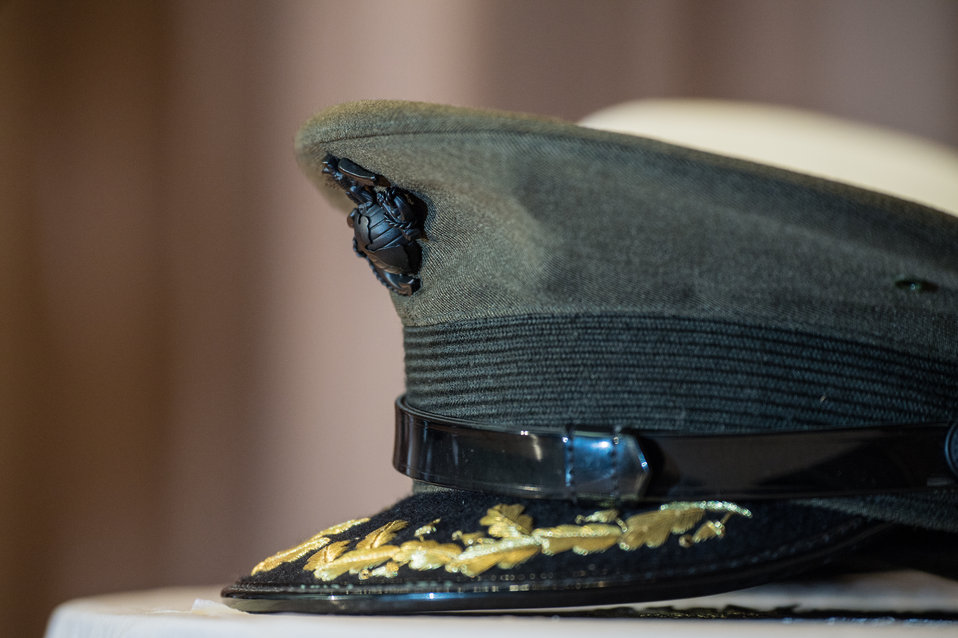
A service hat representing the U.S. Marine Corps (USMC) by Captain (retired) U.S. Army and Vietnam veteran Andrew Malloy at the Prisoner of War (POW)/Missing in Action (MIA) Honors Ceremony at the U.S. Department of Agriculture (USDA) Veterans’ Day Observance, whose theme is “VALOR, COURAGE, SACRIFICE – HONORING ALL WHO SERVED,” in Washington, DC, on Wednesday, November 20, 2013.